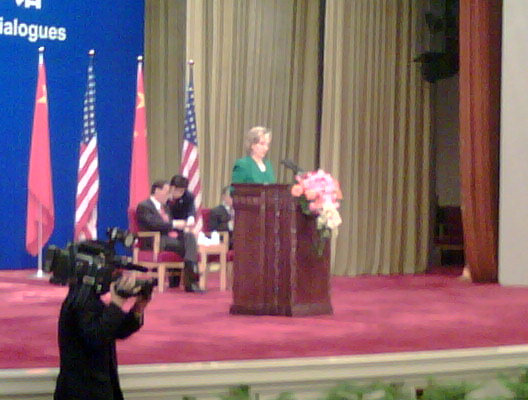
Secretary Clinton Delivers Plenary Address During U.S.-China Strategic and Economic Dialogue

U.S. Secretary of State Hillary Rodham Clinton delivers plenary address during the second round of the U.S.-China Strategic and Economic Dialogue in Beijing, China May 24, 2010.